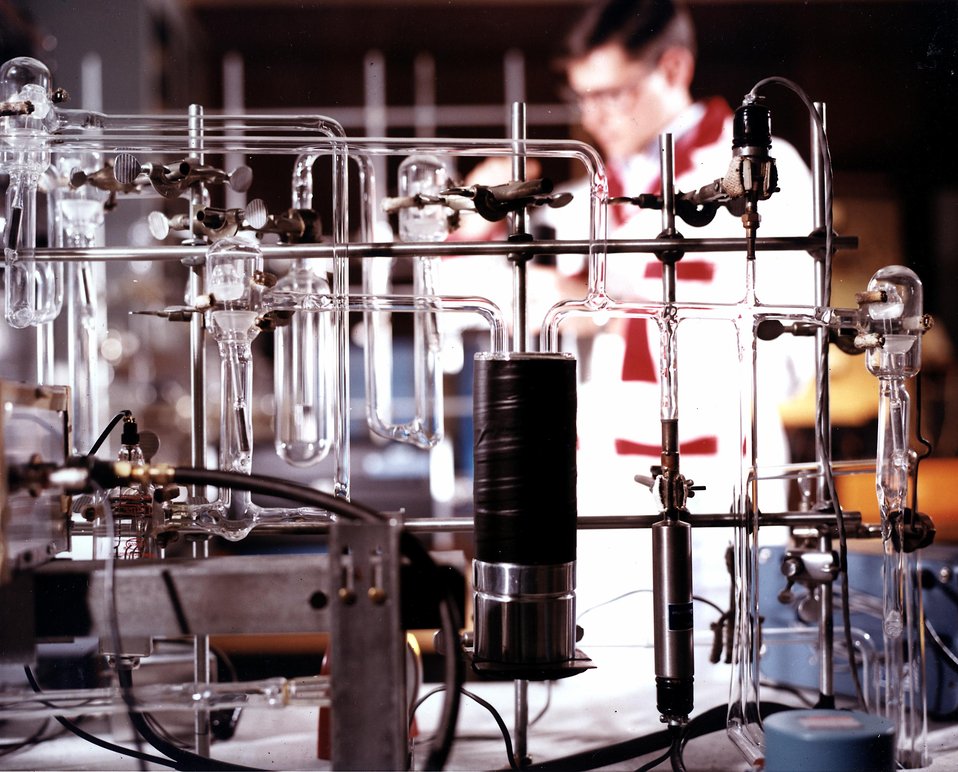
Operator carefully mixes coolant for addition to cold trap in an all glass vacuum system in which gases evolved from crystals irradiated by ultra-violet light from lamp (lower left) are measured. c. 1967